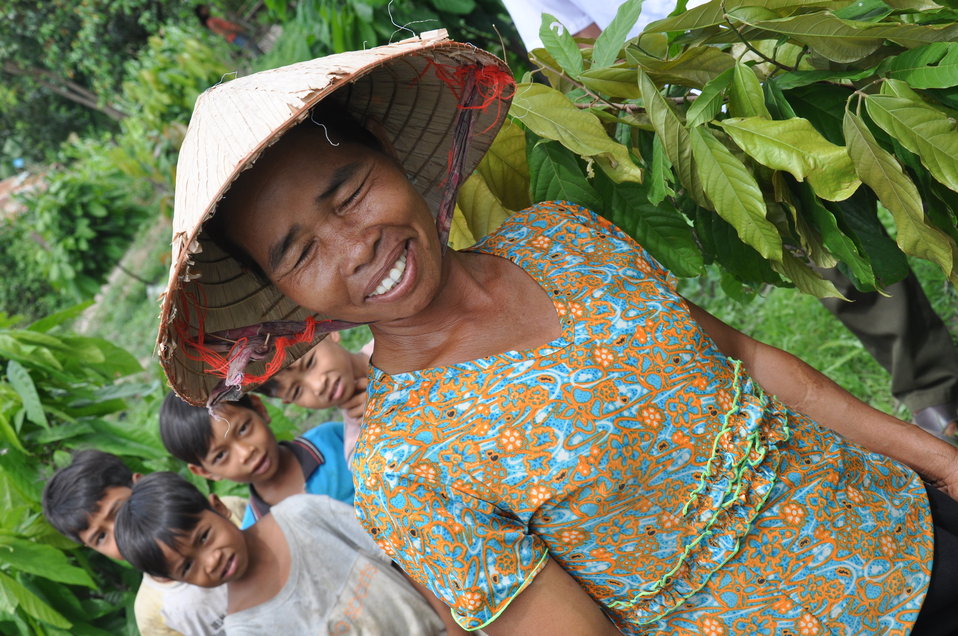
USAID supports cocoa farmer families in Dak Lak, Vietnam